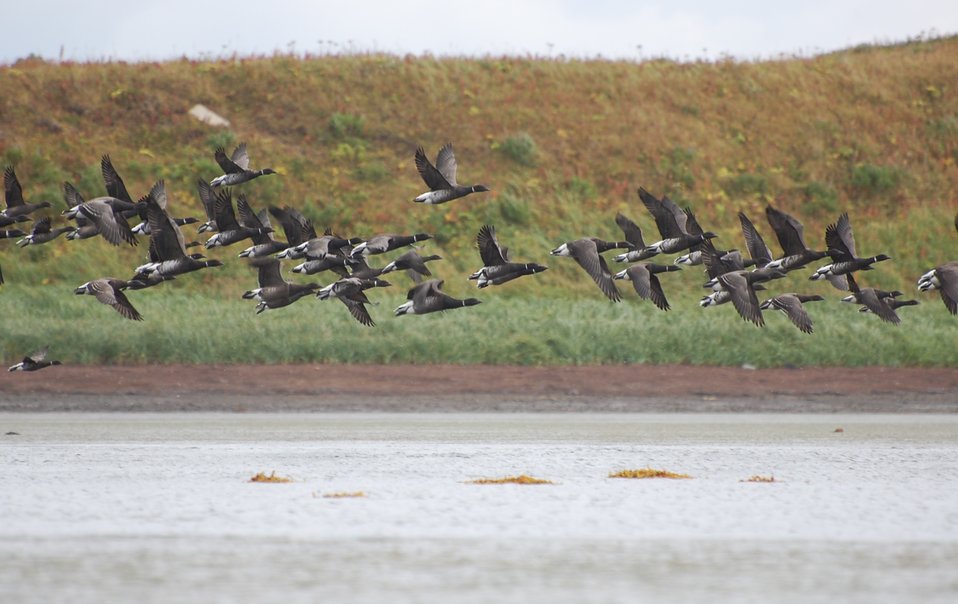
Brant at Izembek Lagoon

Izembek National Wildlife Refuge